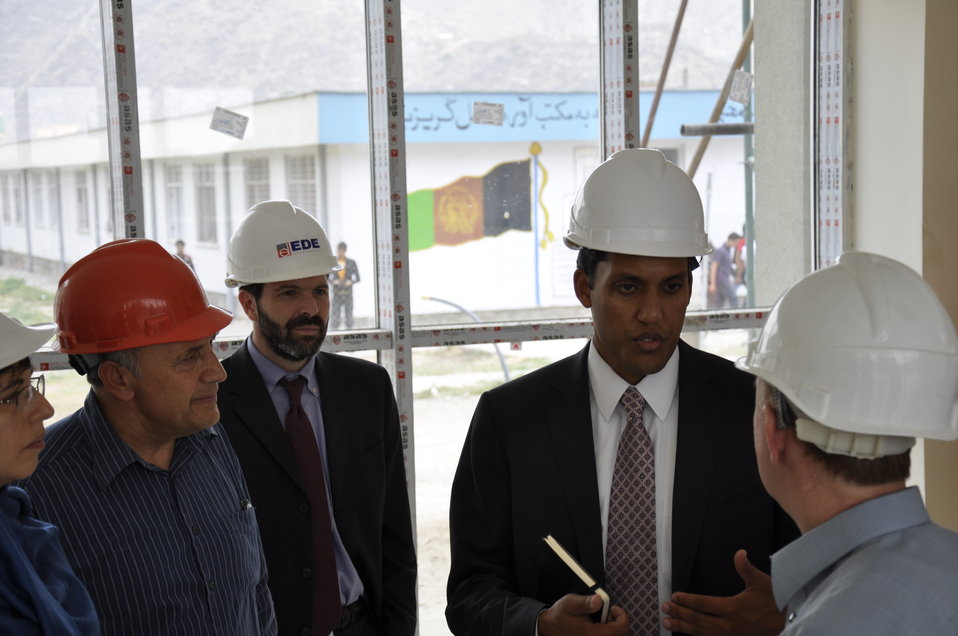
Ghazni High School in Kabul